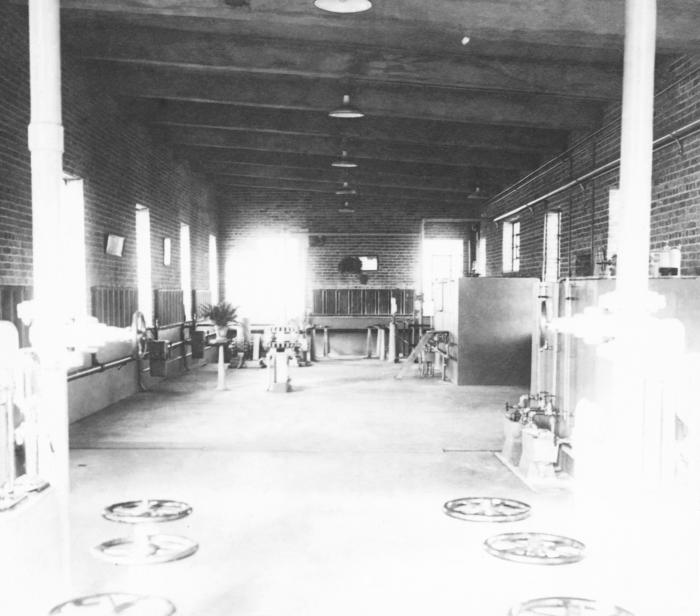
This historic 1916 photograph depicted an interior view of the Chisholm, Minnesota, Water and Light Company's water filtration plant, which was used to purify the town's potable water supply. An exterior view is pictured in PHIL image #8481.